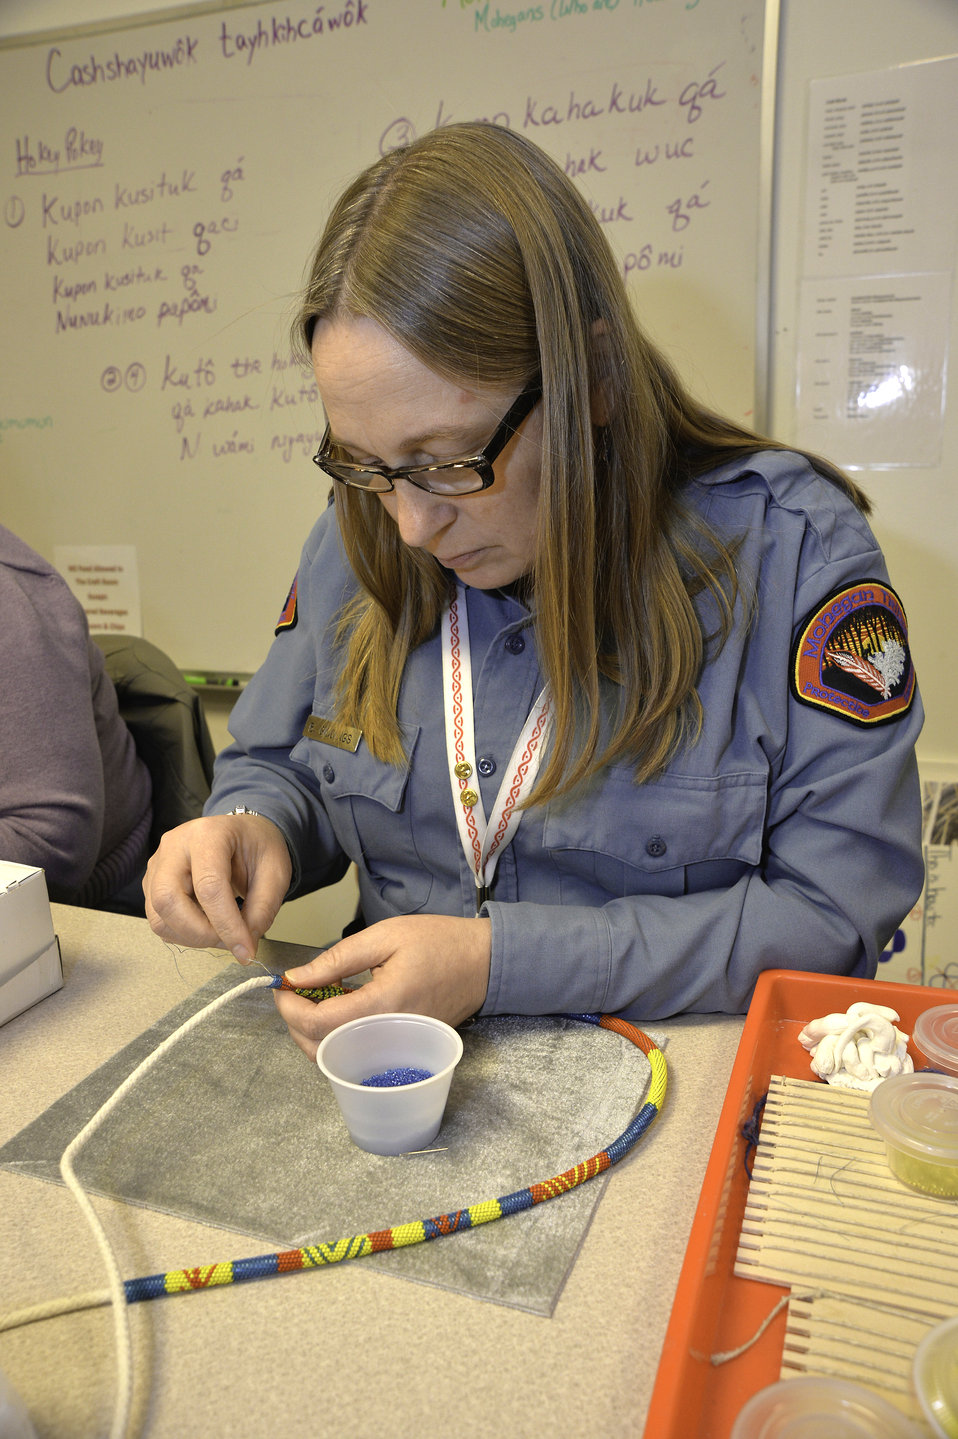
Mohegan members work on Native American crafts at the Arts and Crafts center in the Mohegan Tribe Community Center and Government Building in Uncasville, CT on Nov. 19, 2013. A U.S. Department of Agriculture (USDA) Rural Development (RD) Community Facility Loan was provided to the Mohegan Tribe for the construction of the Mohegan Tribe Community Center and Government Building in Uncasville, CT. USDA’s RD Community Facilities Programs makes and guarantees loans to develop essential community facilities in rural areas and towns of up to 20,000 in population. Loans and guarantees are available to public entities such as municipalities, counties, parishes, boroughs, and special-purpose districts, as well as to non-profit corporations and tribal governments. The 160,000 square foot building Center hosts an exhibit celebrating federal recognition, history of Mohegan Chiefs, a new Library and Archives space, new Arts and Crafts room, a new gymnasium, and a new community room to enjoy food and family. The Center will continue the Tribe’s plan for growth and meeting the needs of its members.